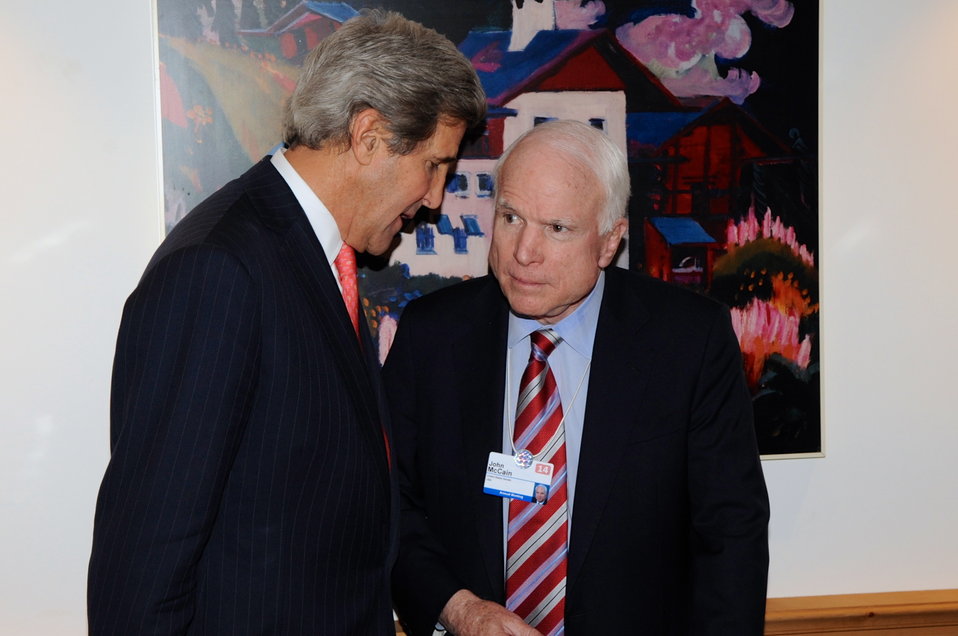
Secretary Kerry Chats With Senator McCain in Davos

U.S. Secretary of State John Kerry chats with Senator John McCain of Arizona during a dinner hosted by Coca-Cola CEO Muhtar Kent on the sidelines of the World Economic Forum in Davos, Switzerland, on January 23, 2014.